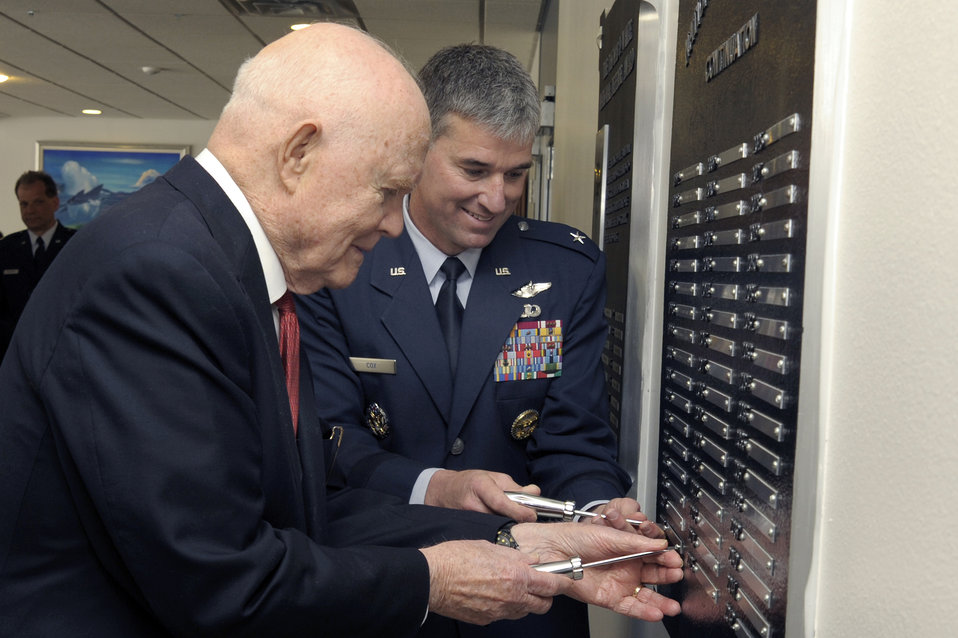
Academy honors Senator Glenn

Sen. John Glenn and Commandant of Cadets Brig. Gen Samuel Cox mount the name plate for Senator Glenn April 22 as the recipient of the 2008 Thomas D. White National Defense Award. He was at the Academy for the award presentation.